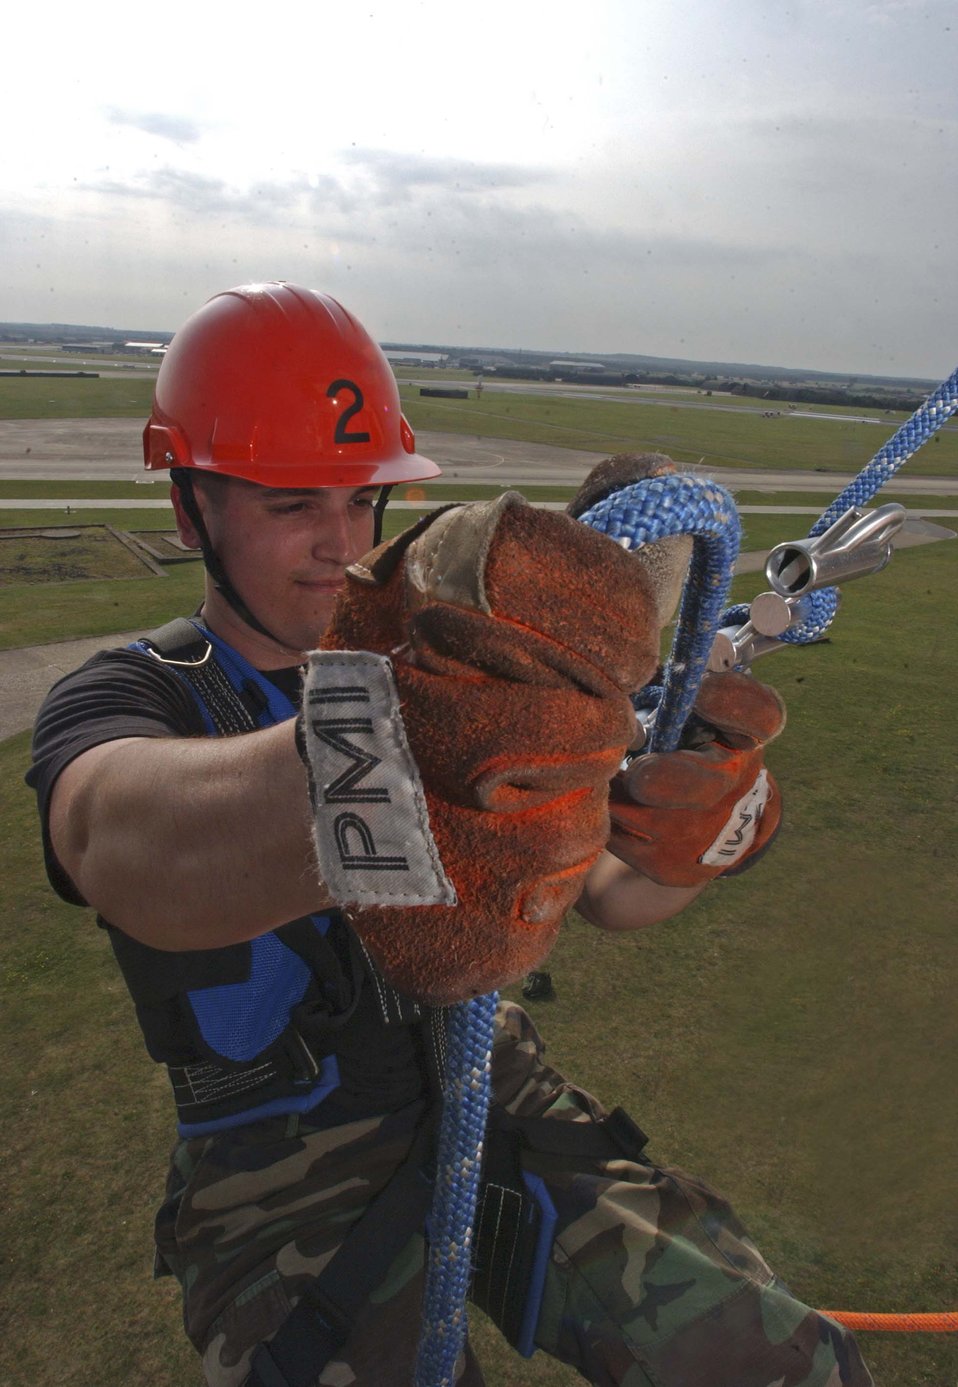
Going down

ROYAL AIR FORCE LAKENHEATH, England -- Staff Sgt. Keith Weaghington prepares to rappel during a fire academy rescue course here July 18. He is a firefighter with the 48th Civil Engineer Squadron.